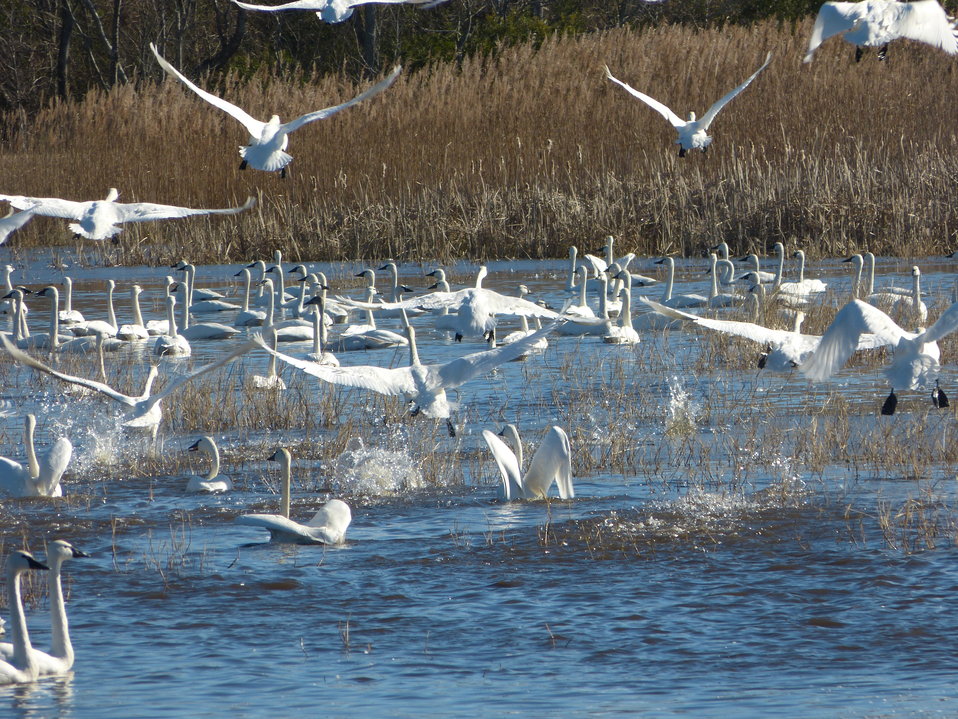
Flock of swans at Lake Mattamuskeet

At Mattamuskeet National Wildlife Refuge in North Carolina. The Refuge’s prime location along the Atlantic Flyway makes it a vitally important stopover for wintering waterfowl.